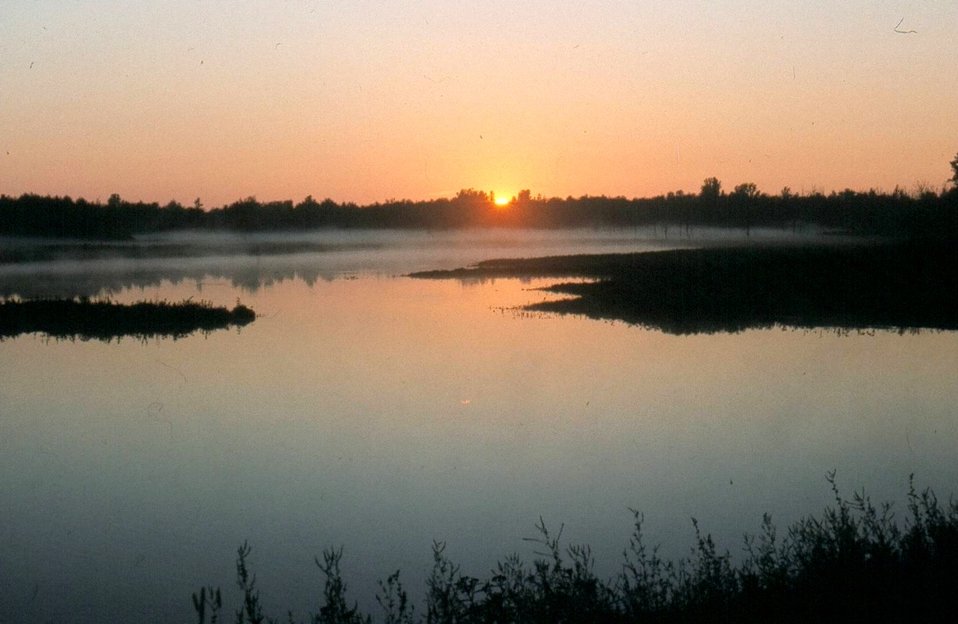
A new day awakens in the marsh

Iroquois National Wildlife Refuge in New York.